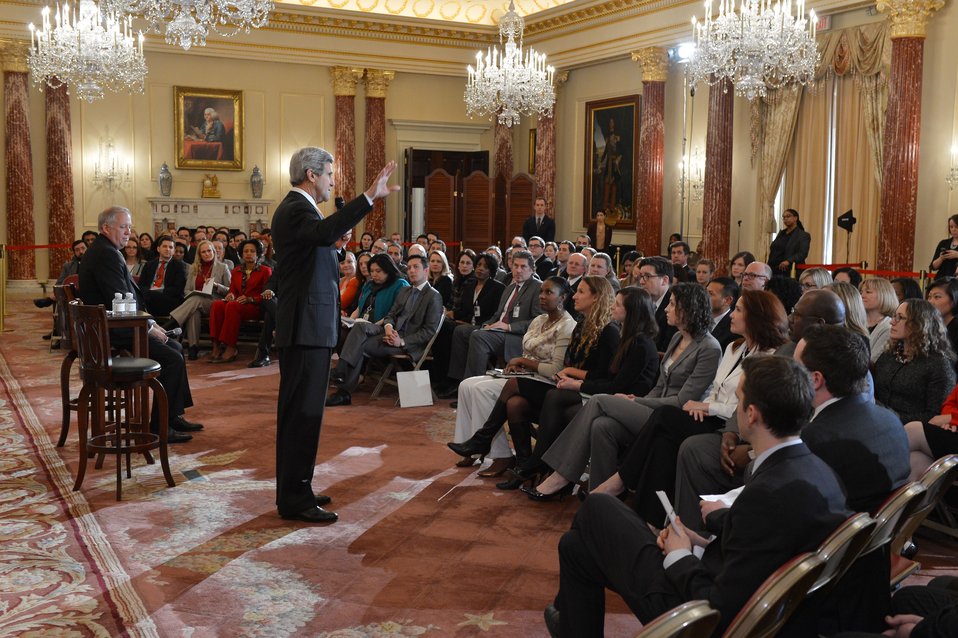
Secretary Kerry Holds a Conversation With State Department Employees

U.S. Secretary of State John Kerry holds a conversation with employees at the U.S. Department of State in Washington, D.C., on January 29, 2014.